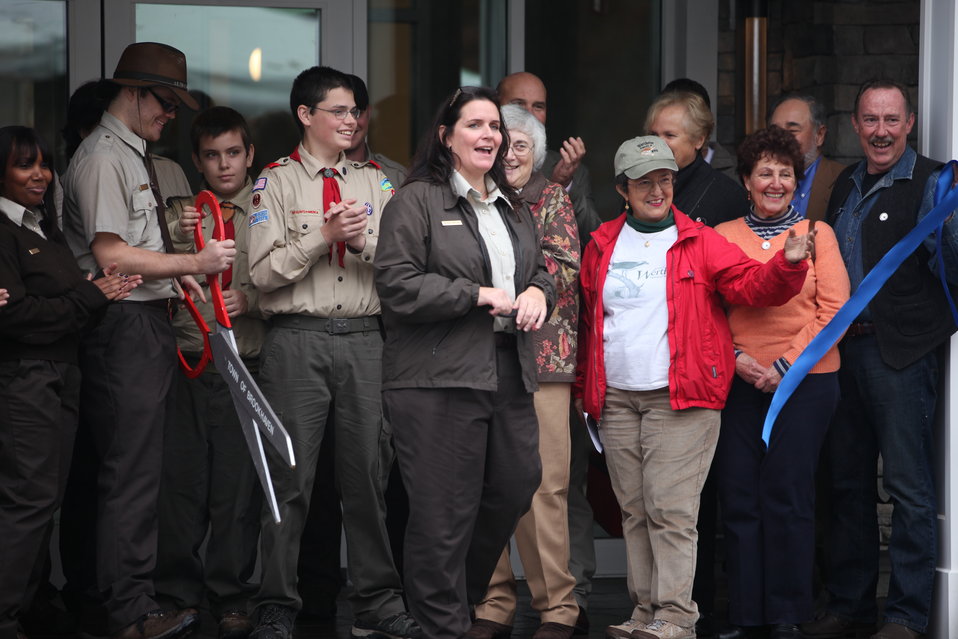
Ribbon Cutting Ceremony-the ribbon is cut!

The ribbon falls to the ground after being cut by Refuge Manager Michelle Williams, staff and Friends.